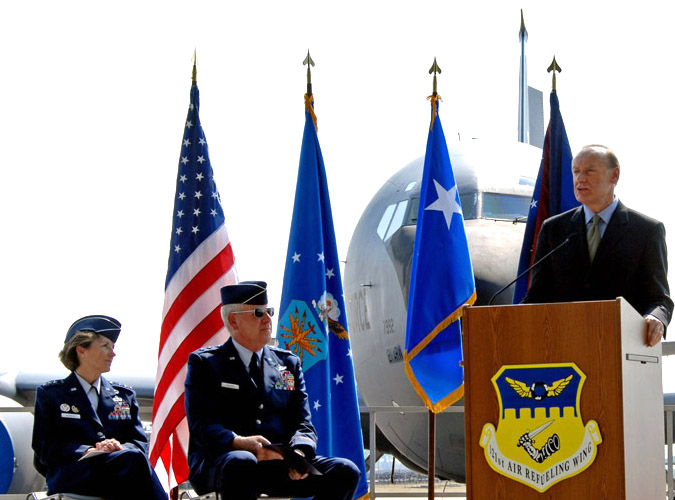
Ohio capital's mayor applauds Air Force heritage

Ohio Lt. Gov. Lee Fisher Sept. 24 issued a state proclamation Sept. 25 at Rickenbacker International Airport in Columbus, Ohio, designating Sept. 24 to 30 as Air Force Heritage Week. Joining Mr. Fisher were Lt. Gen. Terry Gabreski (left), vice commander of Air Force Materiel Command, and Maj. Gen Harry W. Feucht, Jr., assistant adjutant general for Air and commander of the Ohio Air National Guard. Air Force Heritage Week is held in recognition of the Air Force's 60th anniversary.